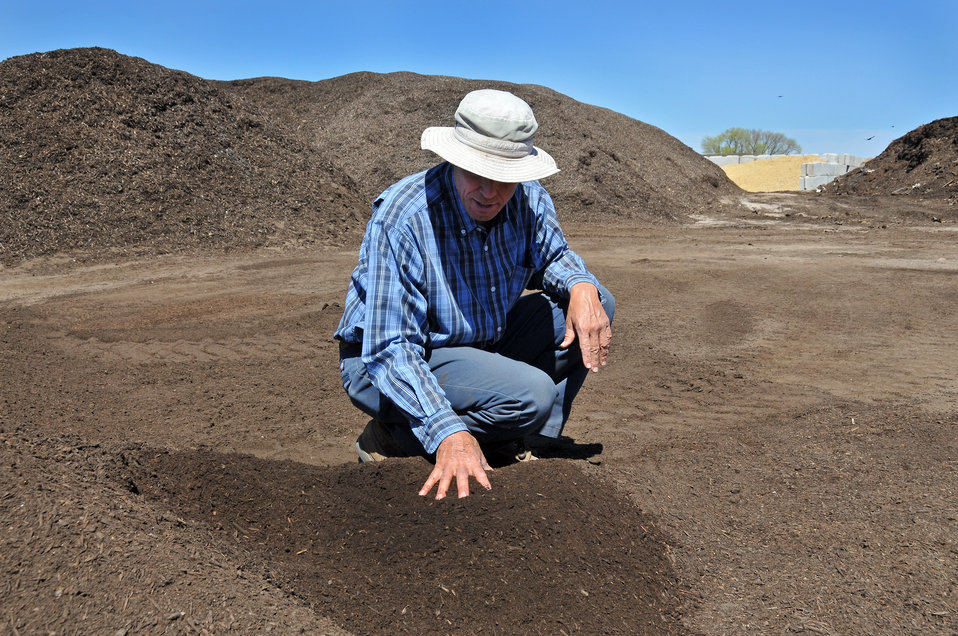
Soilutions Manager examines finished compost at the South Valley Composting Facility.

The composting program began in March 2010 as a pilot to divert food preparation waste and leftovers from the regular waste stream that is sent to Rio Rancho's landfill to a local business that recycles food waste into useable and sell-able compost.